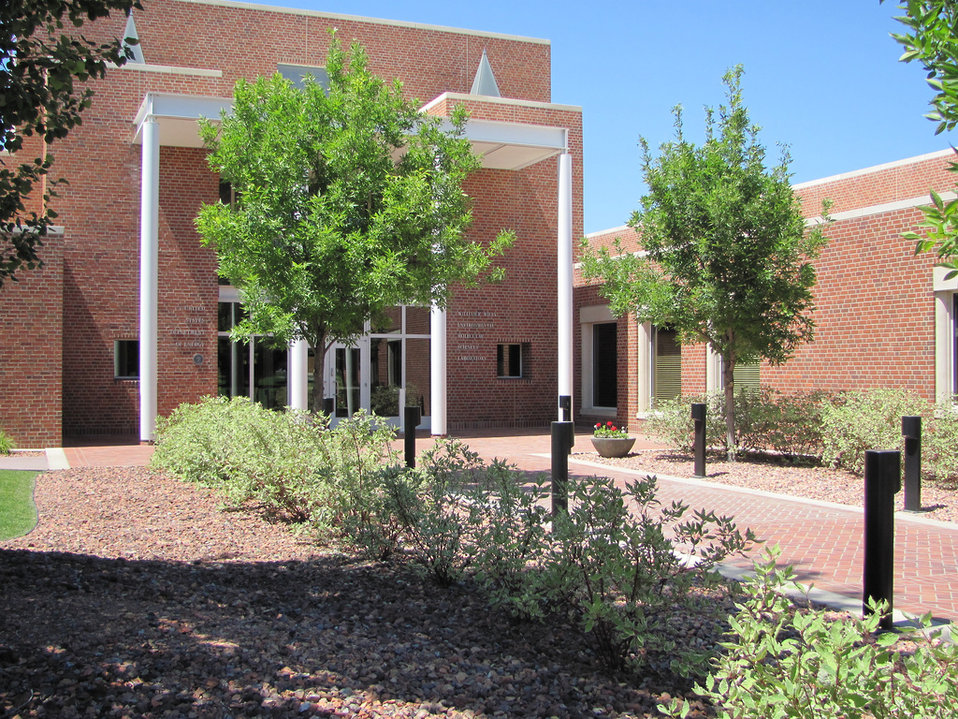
The Environmental Molecular Sciences Laboratory, a DOE national scientific user facility located on the PNNL campus, offers an open,collaborative environment to scientists around the world.
EMSL offers access to instruments otherwise unavailable to many at their home institutions to further their scientific studies. All resources housed within EMSL are available at no cost to the researchers if the results are shared in the open literature.